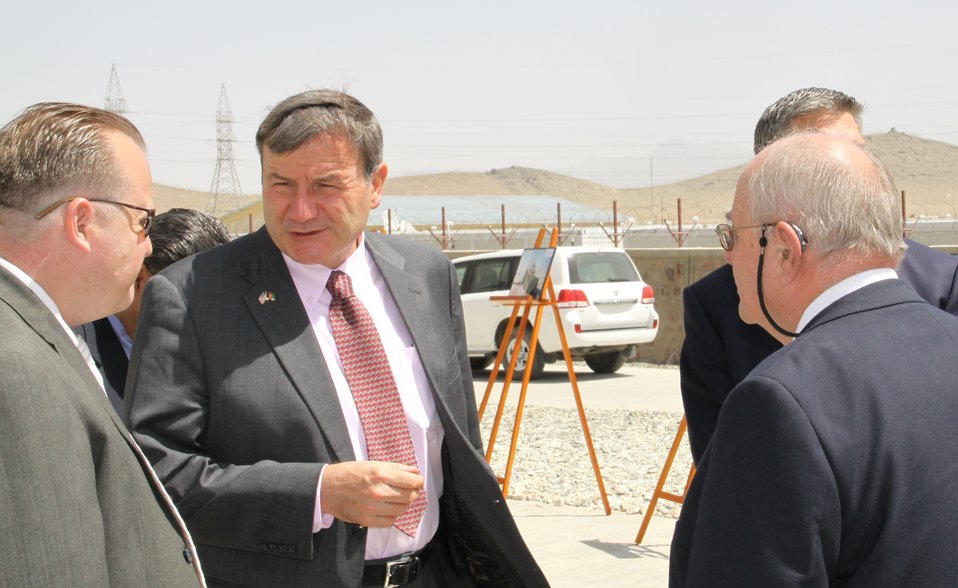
105 MW Tarakhil Power Plant Handover